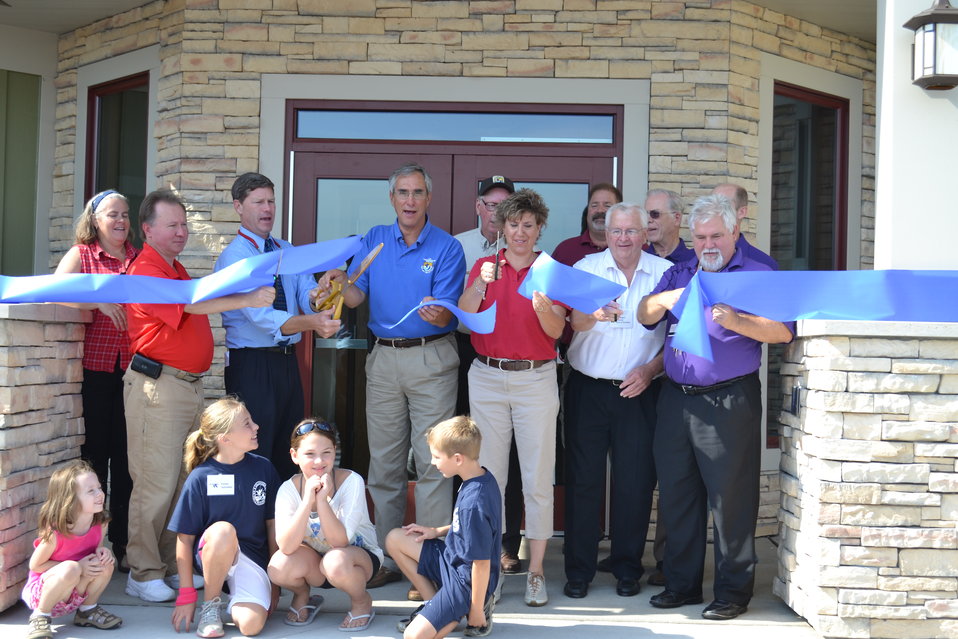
Ribbon Cutting

From L to R: Tara Johnson, La Crosse County Board of Supervisors; State Representative Steve Doyle; Congressman Ron Kind; Tom Melius, Midwest Regional Director, USFWS; Jim Nissan, La Crosse District manager, USFWS; State Senator Jennifer Schilling; Kevin Foerster, Refuge Supervisor, USFWS; Rolly Bogert, chairman, Town of Onalaska; Wes Hurlburt, Onalaska Area Business Association; Joe Chilsen, Mayor of Onalaska. In the front row, Danielle, Emma, Benson, and Heidi look on.